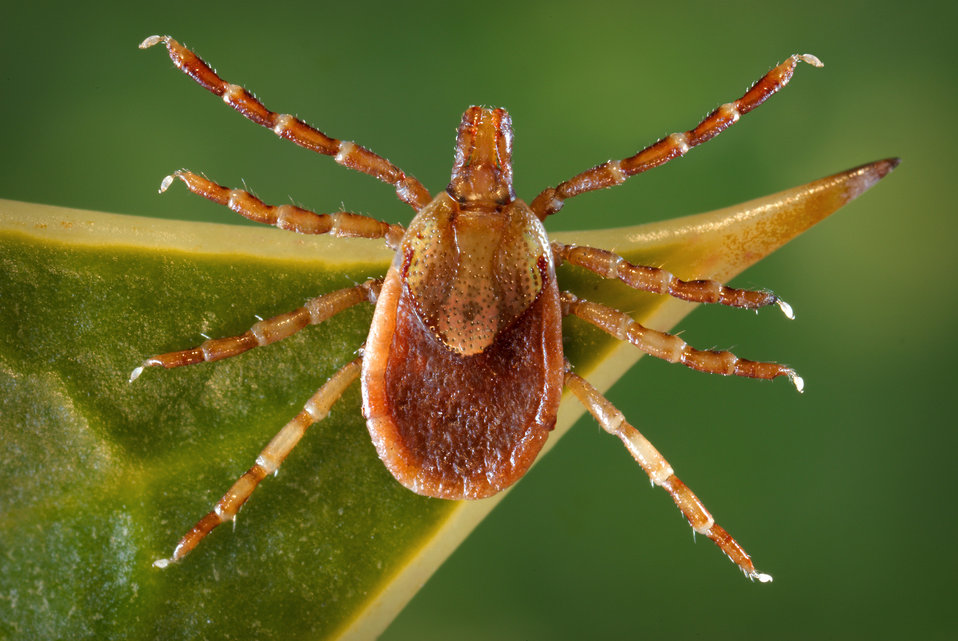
This 2008 photograph depicts a dorsal view of a female yellow dog tick, Amblyomma aureolatum, which is a vector of Rocky Mountain spotted fever (RMSF) in the country of Brazil.